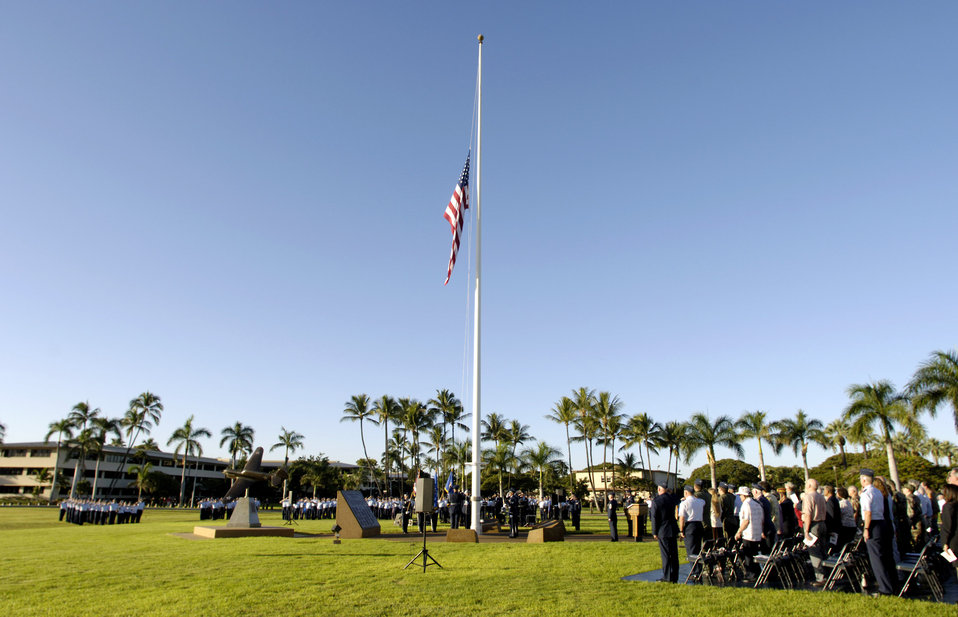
Pearl Harbor remembered

HICKAM AIR FORCE BASE, Hawaii (AFPN) -- Members of the 15th Airlift Wing today commemorated the 64th anniversary of the Dec. 7, 1941 surprise Japanese attack here. The base held a ceremony at the base flagpole to honor the attack on then-Hickam Field, which left 189 dead and 303 wounded. The dining hall in what is now the Pacific Air Force headquarter's building, took a direct hit from a 500-pound bomb, instantly killing 35 men.